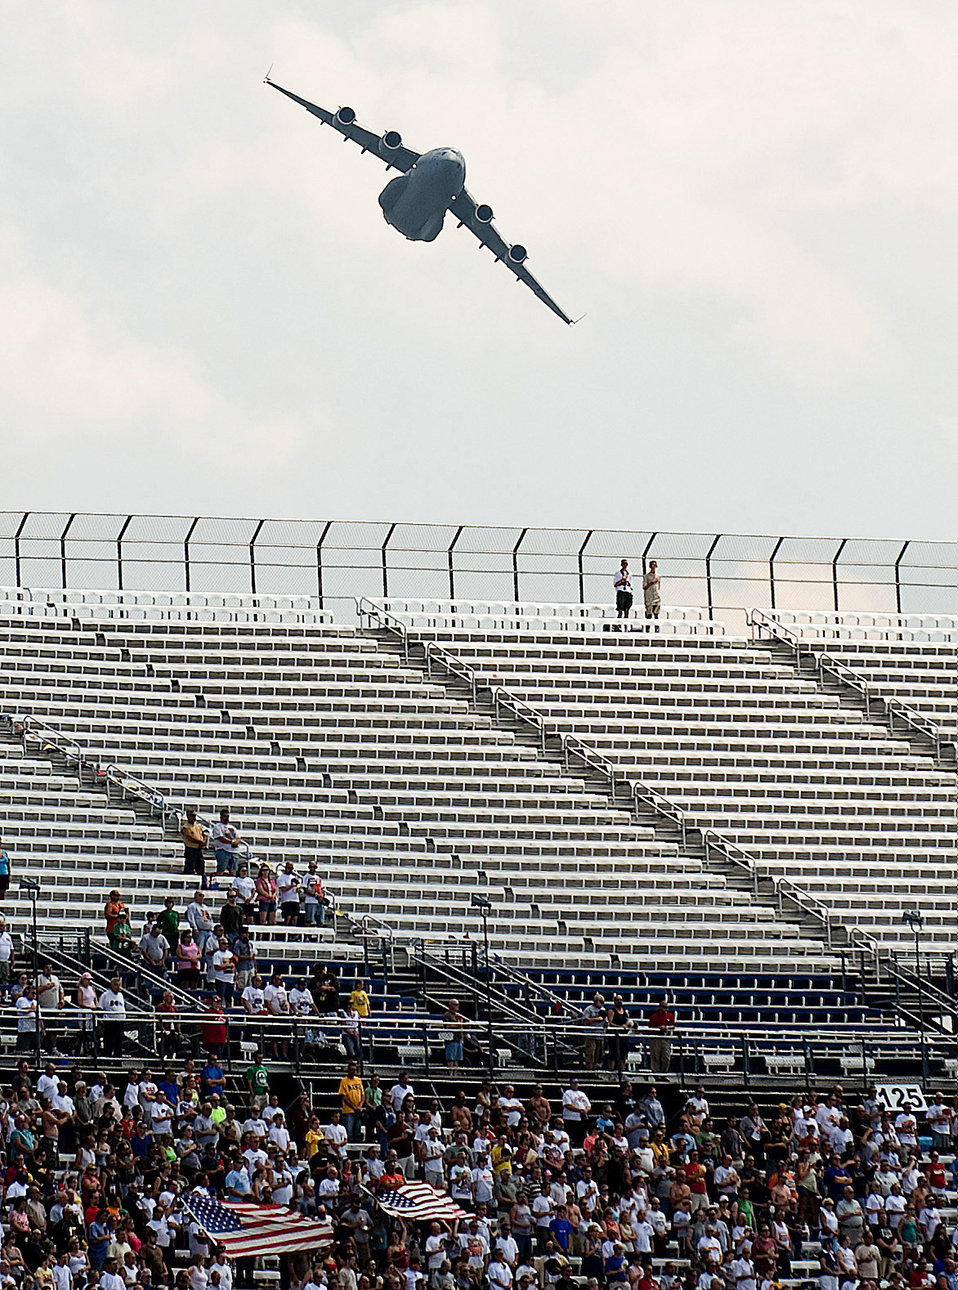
Soaring above Dover Downs

A C-17 Globemaster III performs a fly-over before the Heluva Good! 200 NASCAR race at Dover Downs May 30 in Delaware. The C-17 is flown by an aircrew from Dover Air Force Base, Del.